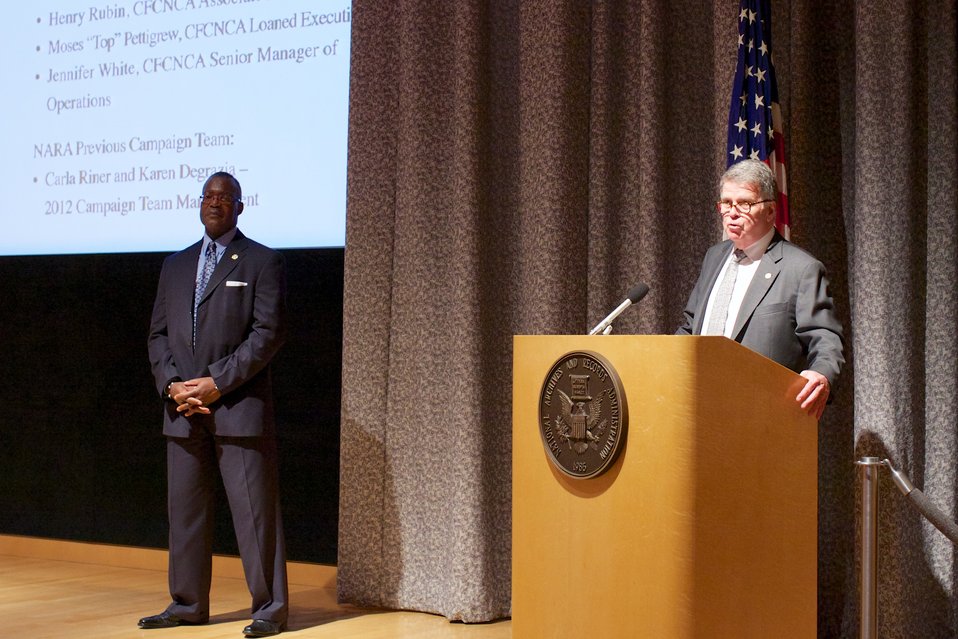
CFC Recognition Event